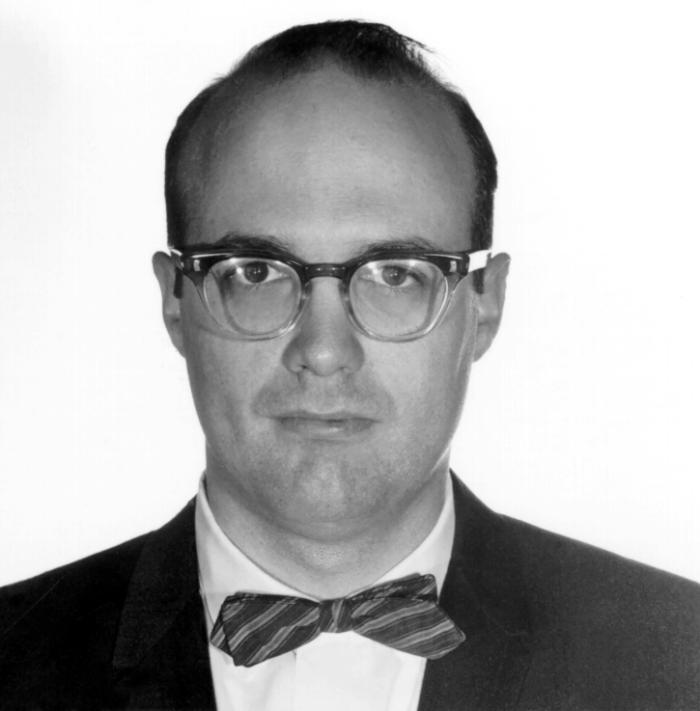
Carl W. Tyler, M.D. served as an outstanding and dedicated public health service physician and administrator for the CDC.